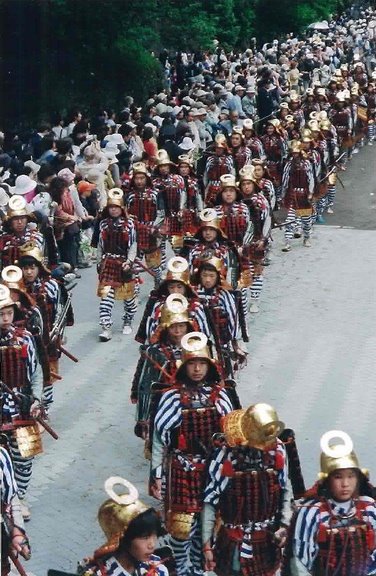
Photo I took at the 1000 Samurai Festival in Nikko